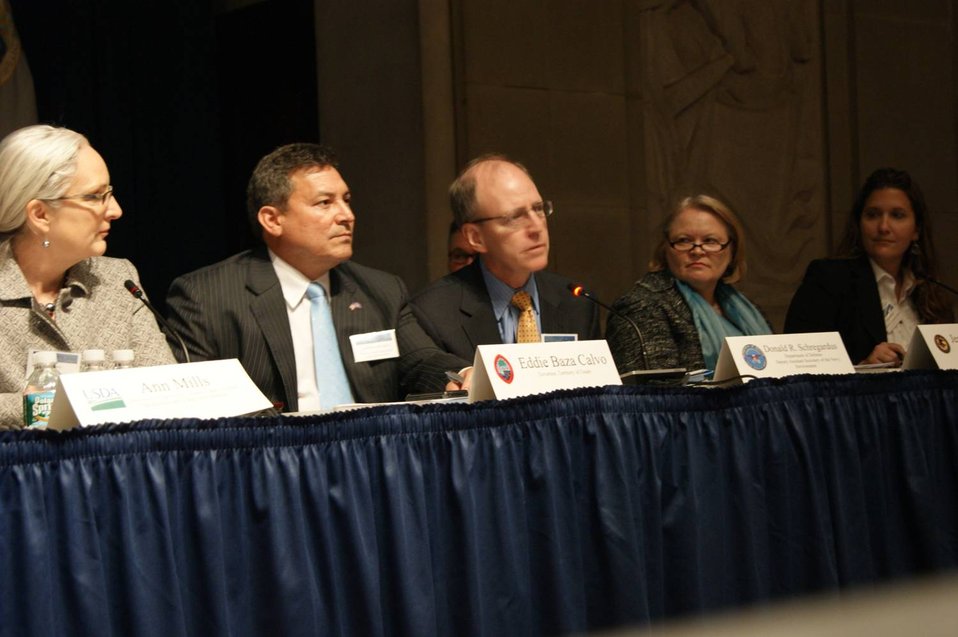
Coral Reef Task Force - Winter Meeting 2012